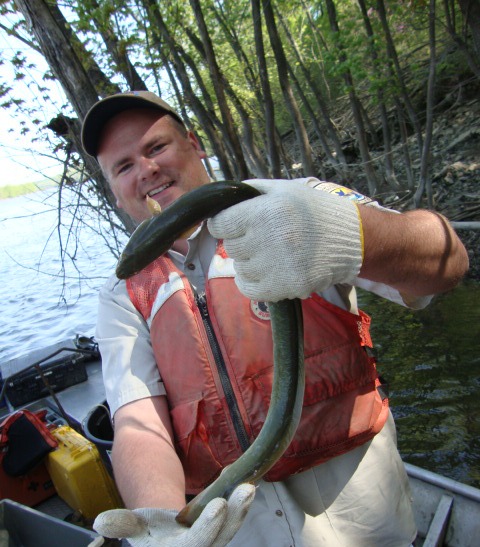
American Eel

Andy Plauck with the U.S. Fish and Wildlife Service Midwest Region holds an American eel from Osage River.